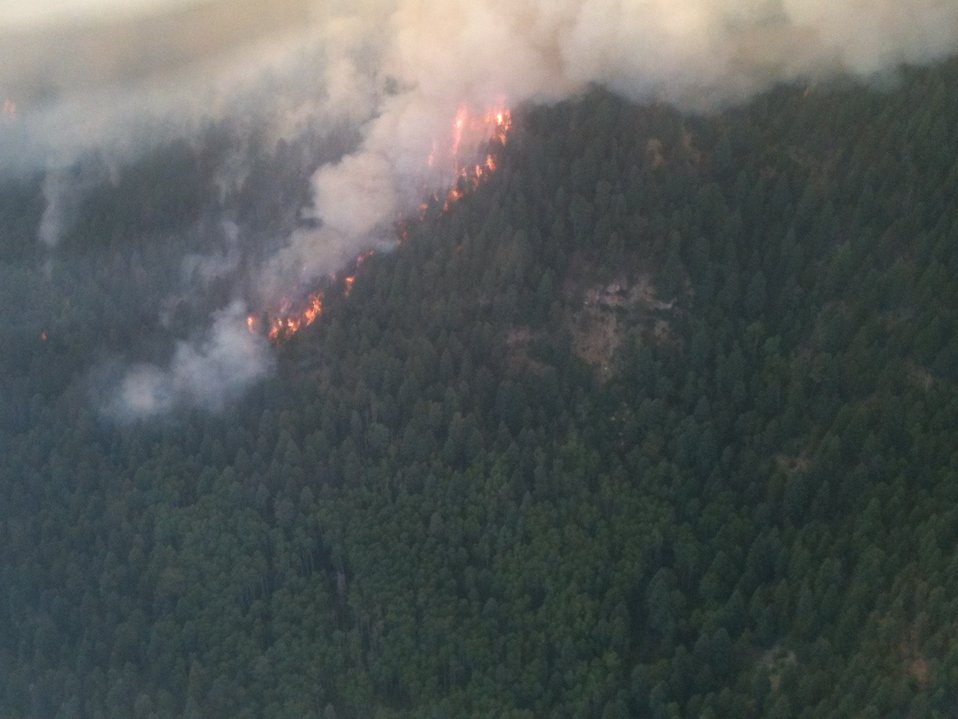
The Little Sand Wildfire burns in the San Juan National Forest near Pagosa Springs, CO, on Monday, June 18, 2012. The wildfire was started by a lightening strike on May 13, 2012. The fire is in rugged and inaccessible terrain, north of the Piedra River, and is currently estimated at 14,224 acres with 30% containment as of June 20, 2012.